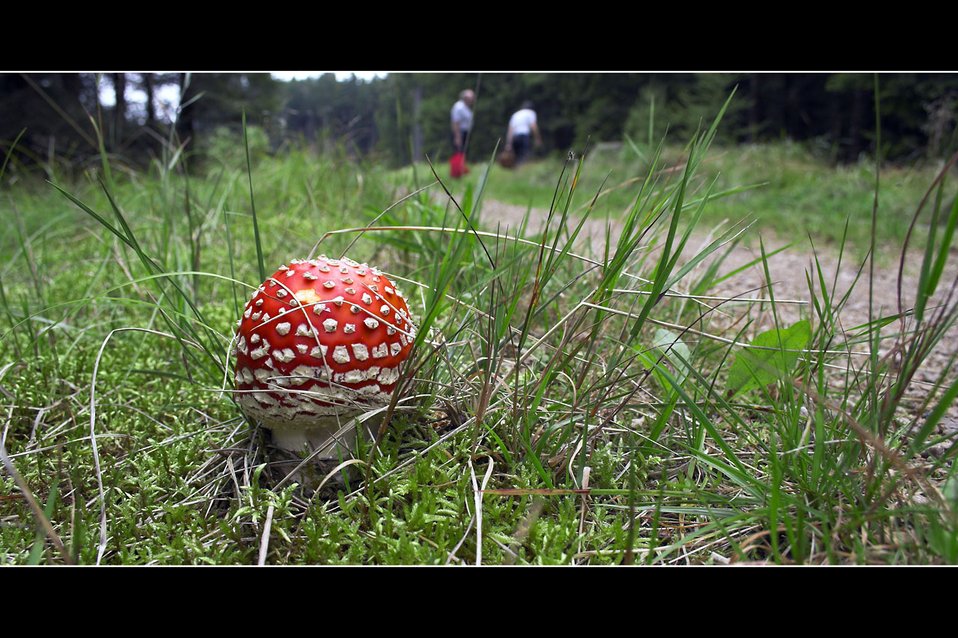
Fly agaric

Beatiful tiny fly mushroom in the grass.